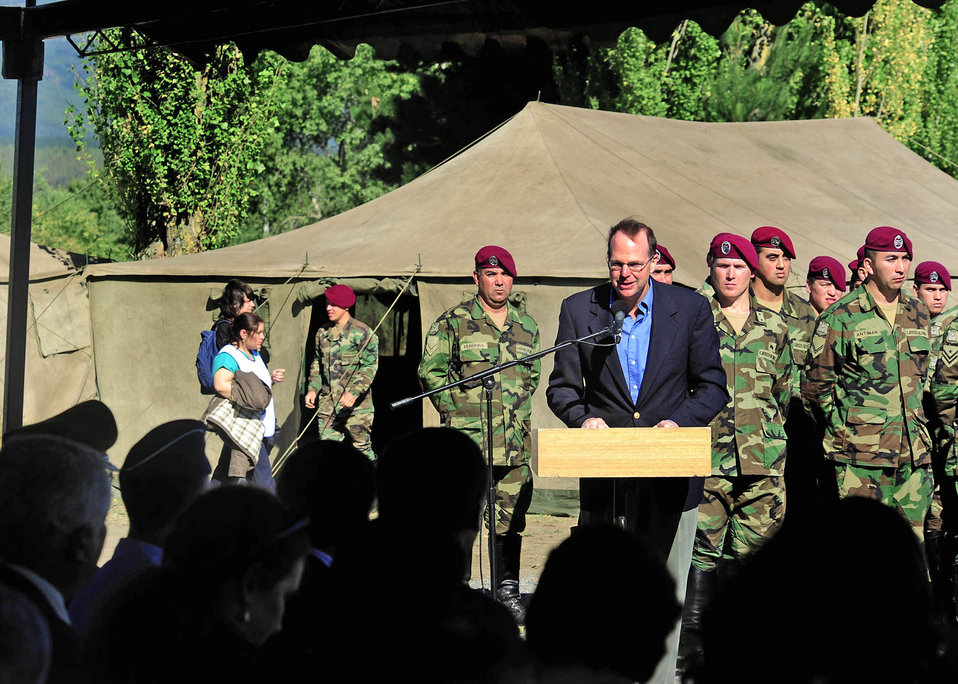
Hospital donation

Paul Simons, the U.S. ambassador to Chile, speaks during a ceremony March 24, 2010, to recognize the donation of the expeditionary hospital to the citizens of Angol, Chile. While the local hospital in Angol is being rebuilt, this medical facility will provide much needed space to provide medical care for the nearly 110,000 in the Angol region.